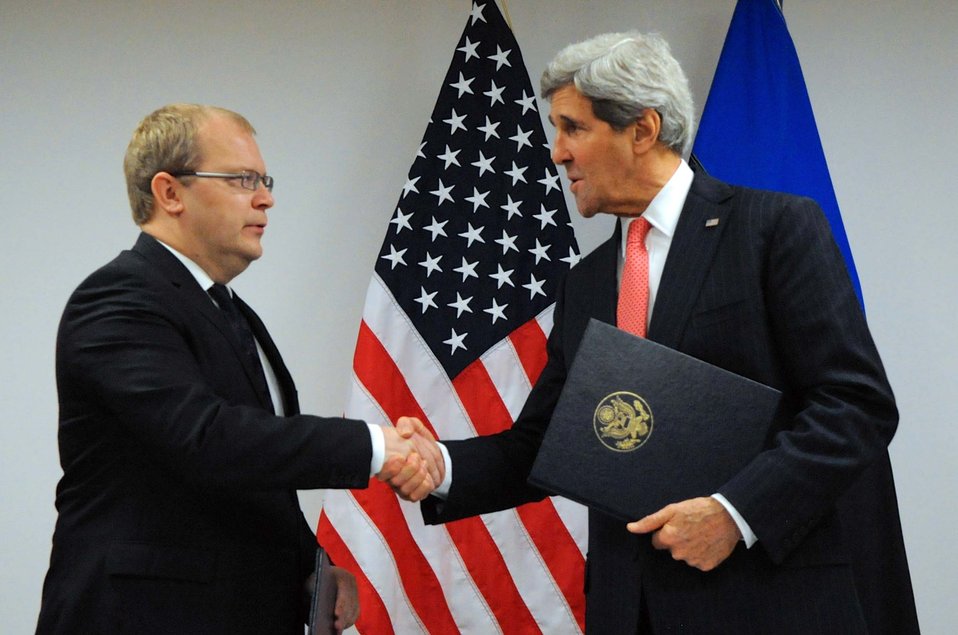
Secretary Kerry Shakes Hands With Estonian Foreign Minister Paet

U.S. Secretary of State John Kerry shakes hands with Estonian Foreign Minister Urmas Paet after signing the U.S.-Estonia Cyber Partnership Statement on the margins of a NATO Ministerial meeting in Brussels, Belgium, on December 3, 2013.